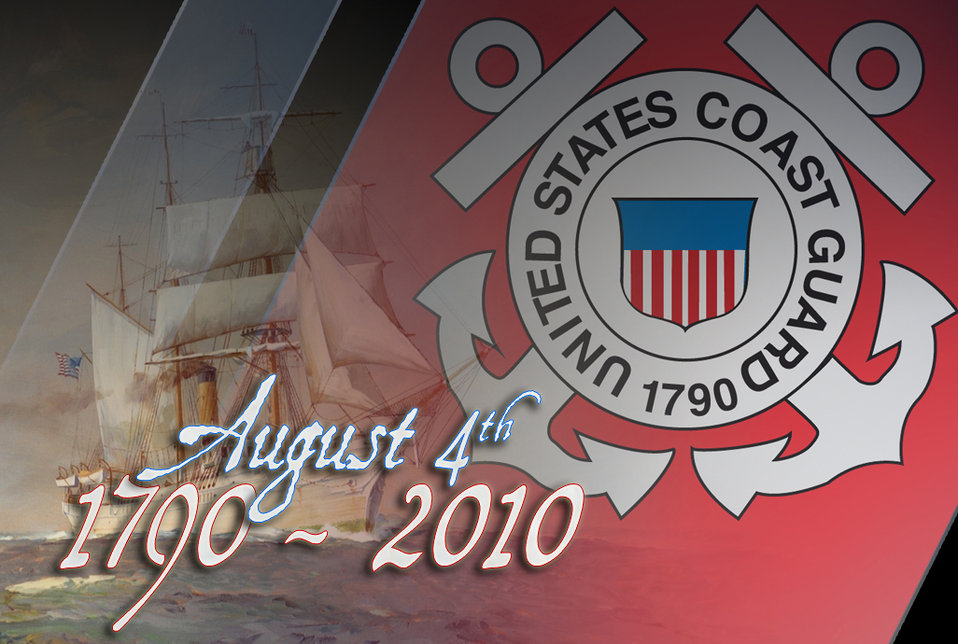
Chairman's Corner: Pride in the Coast Guard